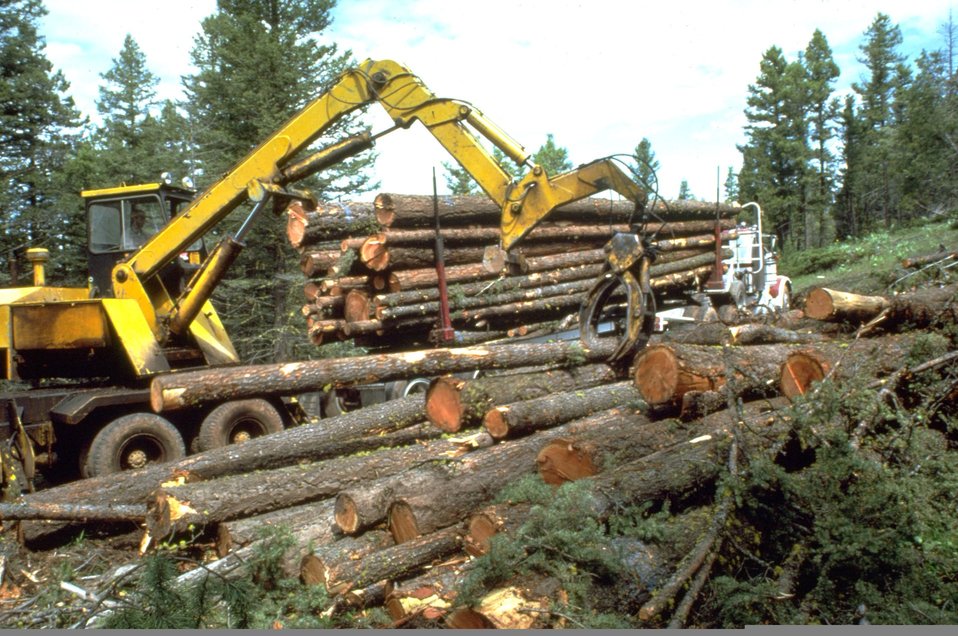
Logging